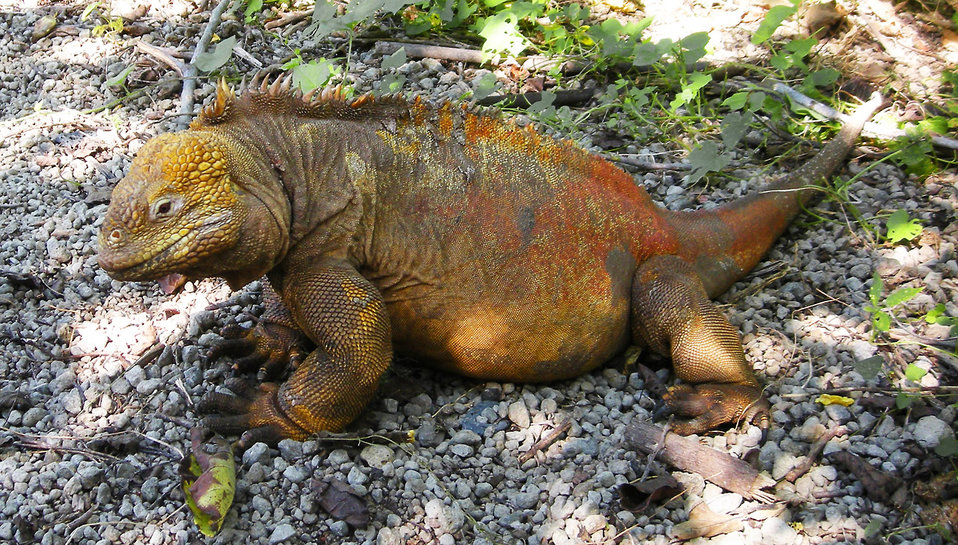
Land iguana, galapagos

Galapagos islands, april 2011.